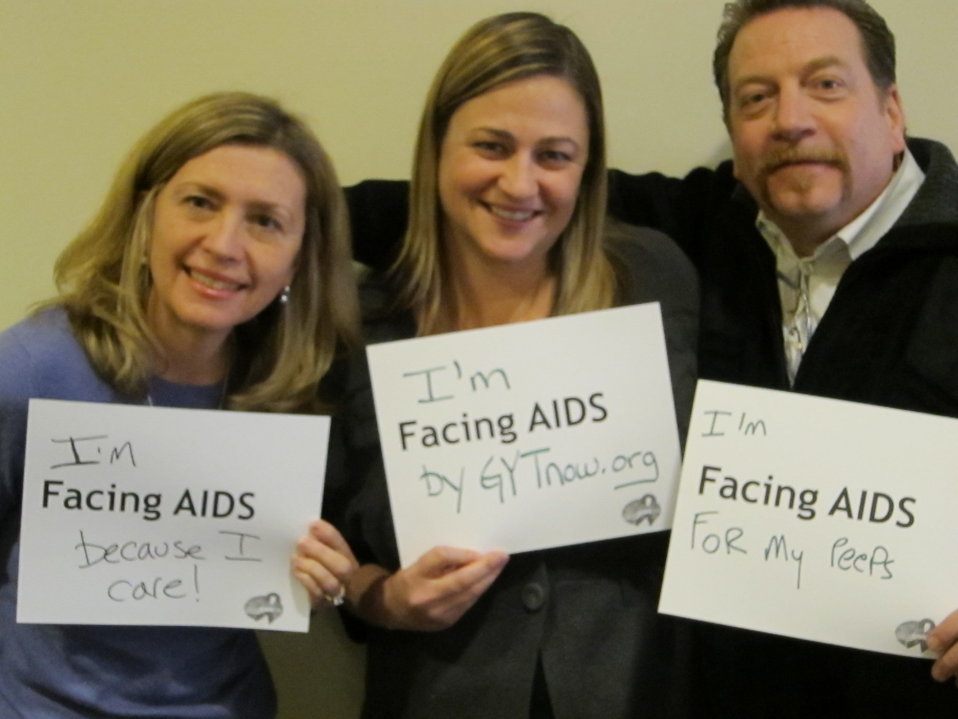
I'm Facing AIDS because I care. I'm Facing AIDS by GYTnow.org. I'm Facing AIDS for my peeps.